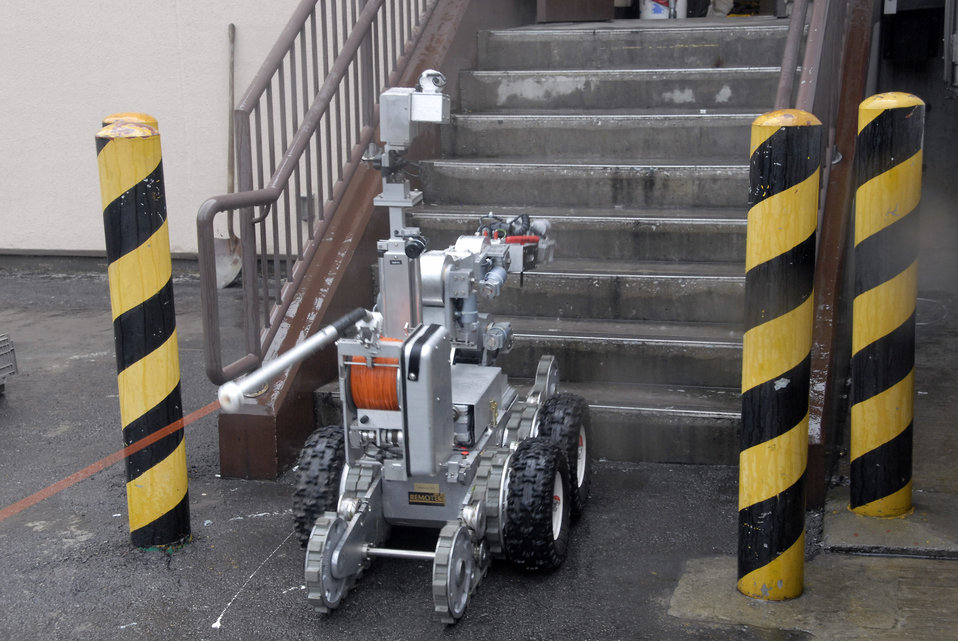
Handle with care

An F6A robot, used by explosive ordnance disposal Airmen with the 51st Civil Engineer Squadron at Osan Air Base, South Korea, prepares to remove a suspicious package at the base post office during a base wide exercise July 24. The robot is equipped with several television cameras for remote viewing and a dexterous arm for hazardous tasks.